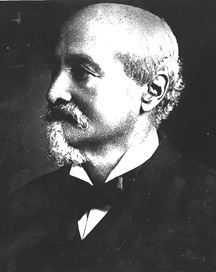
Octave Chanute was born in Paris Feb. 18, 1832, and came to the United States as a child. He became a respected civil engineer and spent most of his adult life as an engineer in the railroad industry, but later gained international fame in the study of aeronautics.